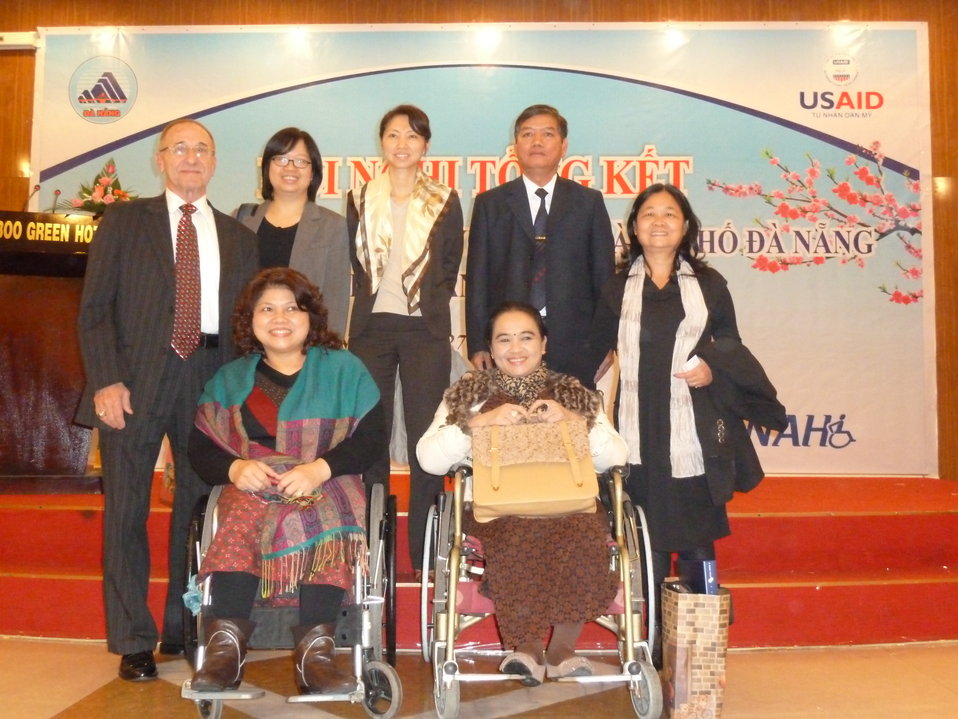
Danang Disability Workshop

Close out workshop of three-year USAID program in disabilities, Danang